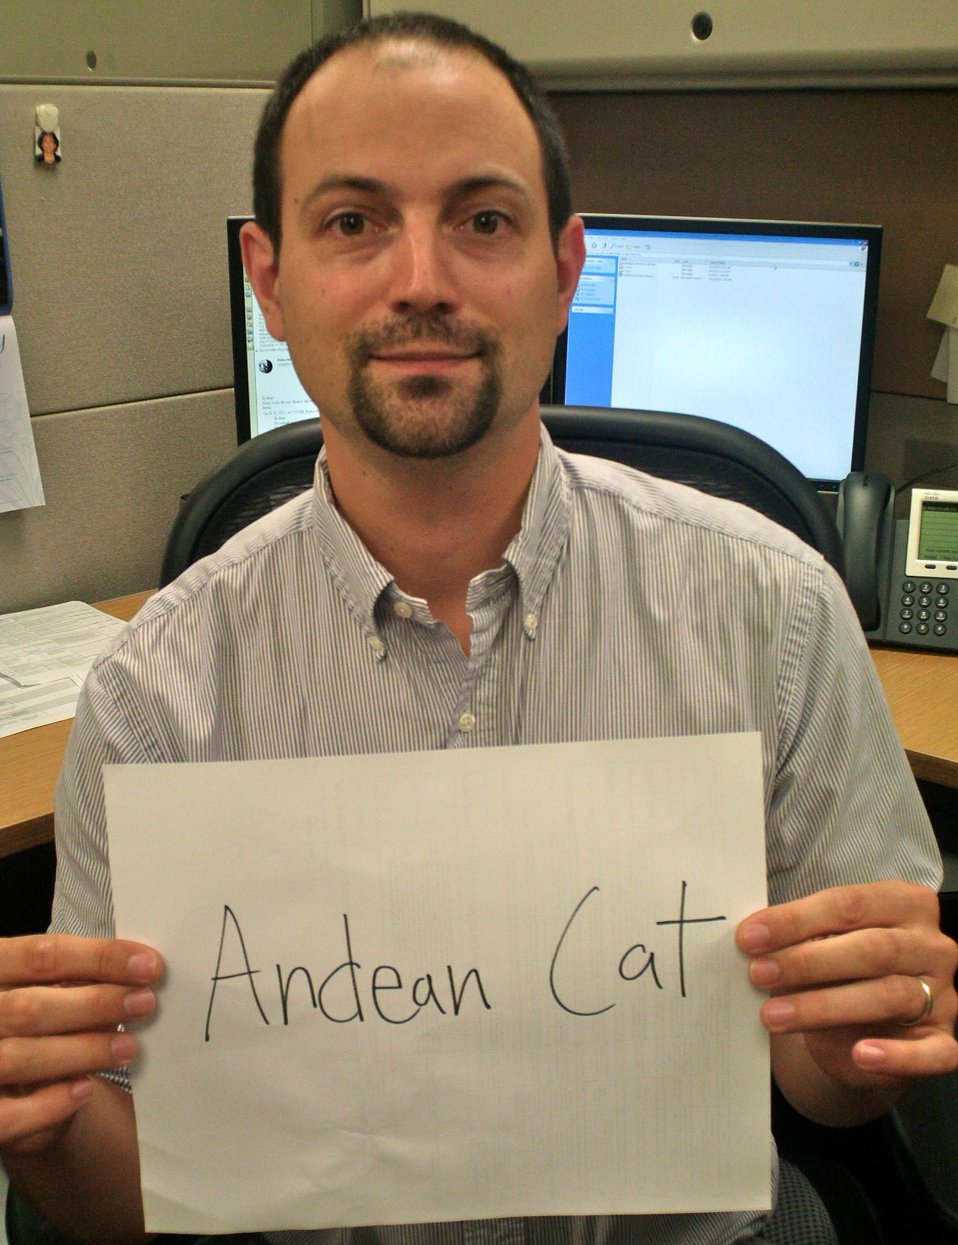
Matt Muir, 'Andean Cat,'

International Affairs participates in FFI's In Our Hands campaign